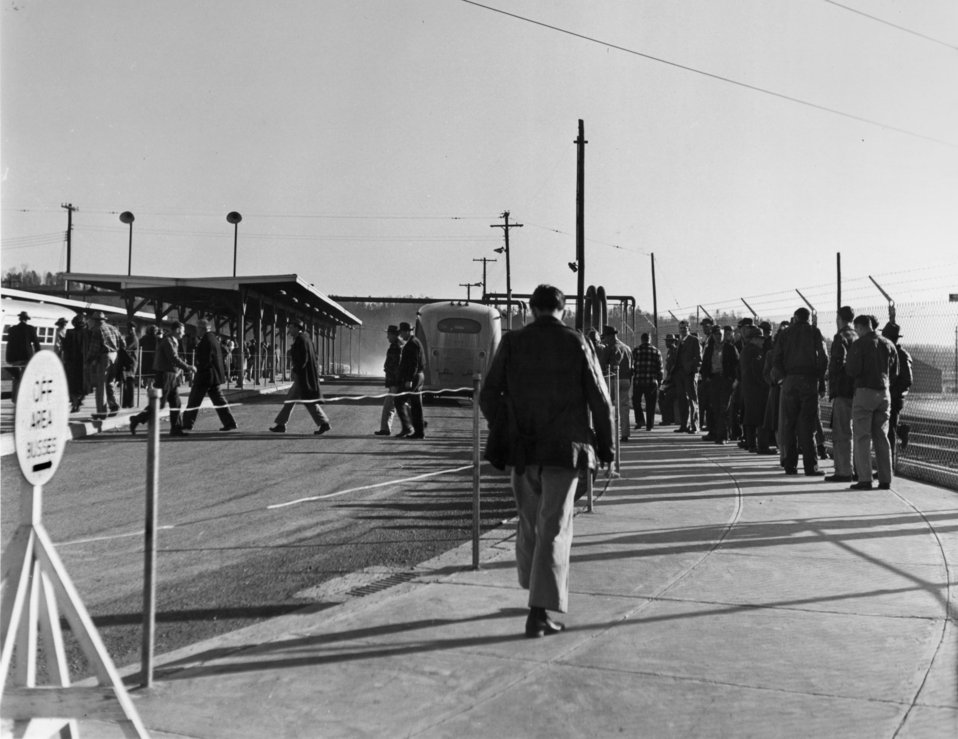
Shift Change K-25 Plant Oak Ridge

K-25 DOE photo Ed Westcott 1949 Oak Ridge Tennessee